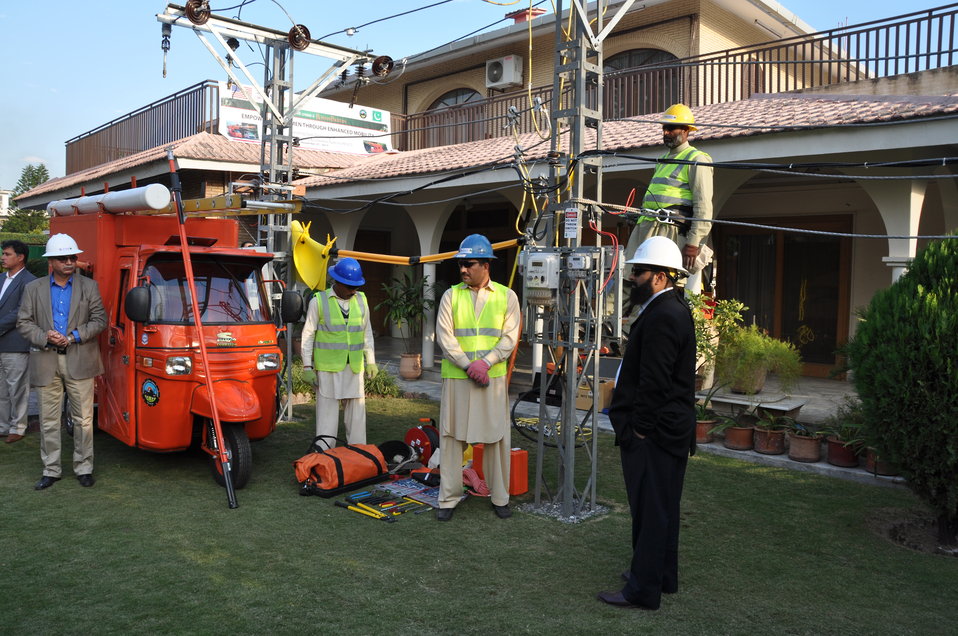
United States Government Strengthens PESCO Field Operations 05